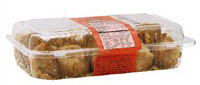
RECALLED – Apple Cinnamon Mini Muffins

September 19, 2013 – Product Recall – Wegmans Food Markets Issues Allergy Alert on Undeclared Soy (Allergen) in Wegmans Apple Cinnamon Mini Muffins, 14 oz.